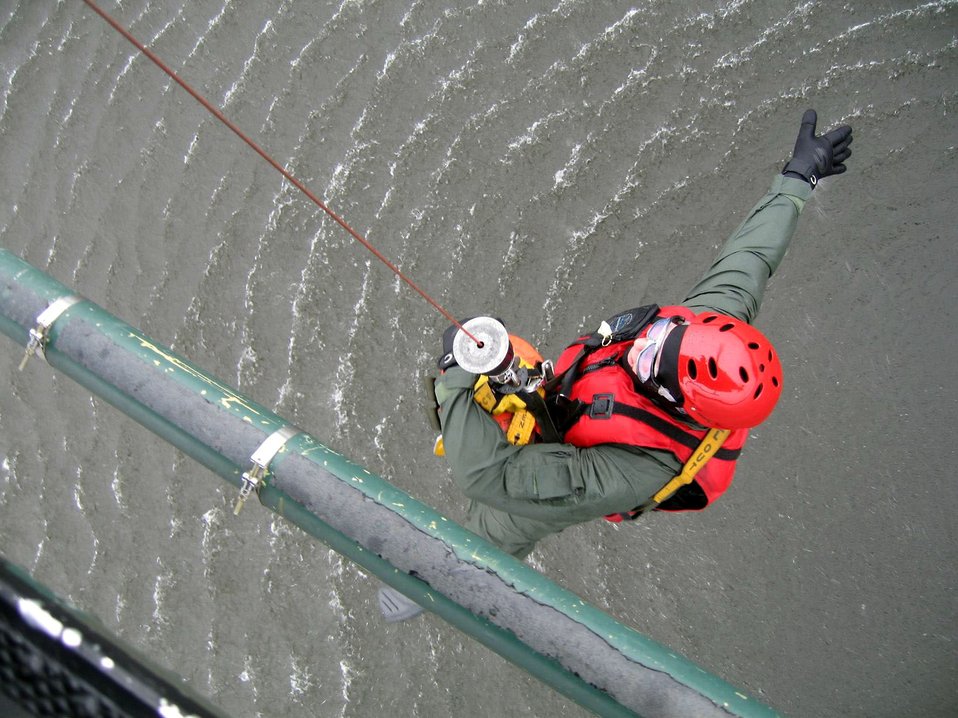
Rescue flight crews provide help from above

Staff Sgt. George Gonzalez practices water hoist procedures from a UH-1N Huey at Fairchild Air Force Base, Wash. Sergeant Gonzalez is an independent duty medical technician assigned to the 36th Rescue Flight as a flight medic in support of survival, evasion, resistance and escape specialist training and the Air Force combat survival school.